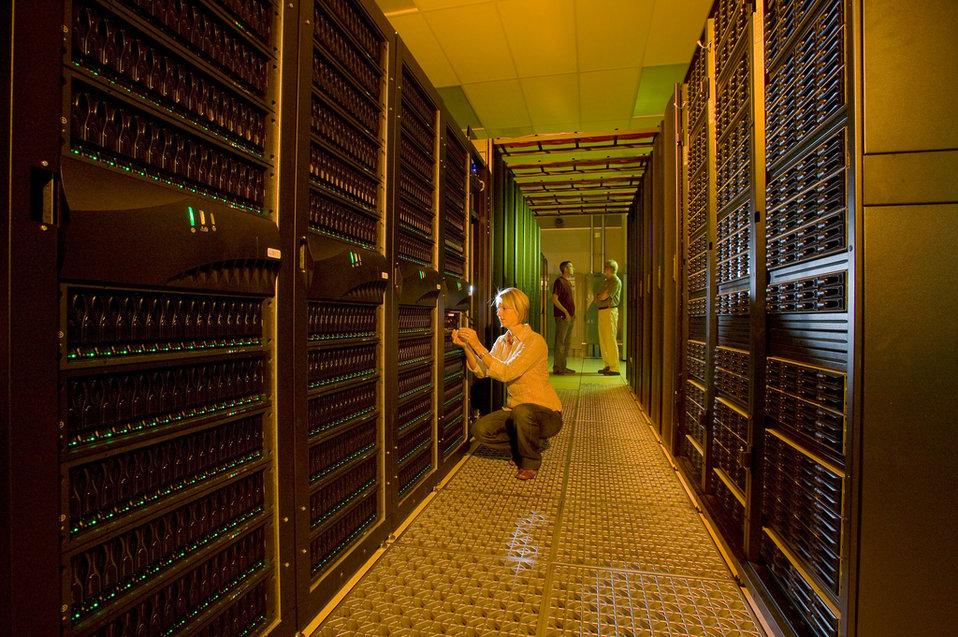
Cindy Heer checks on the Hyperion testbed at Lawrence Livermore National Laboratory.

LLNL has teamed with 10 computing industry leaders to accelerate the development of powerful next-generation Linux cluster in a project dubbed Hyperion. Hyperion brings together Dell, Intel, Supermicro, QLogic, Cisco, Mellanox, DDN, Sun, LSI, and RedHat to create a large-scale testbed for high-performance computing technologies critical to maintaining the again U.S. nuclear weapons stockpile without underground nuclear testing, and industry's ability to make petaFLOP/s (quadrillion floating operations per second) computing and storage more accessible for commerce, industry and research and development.